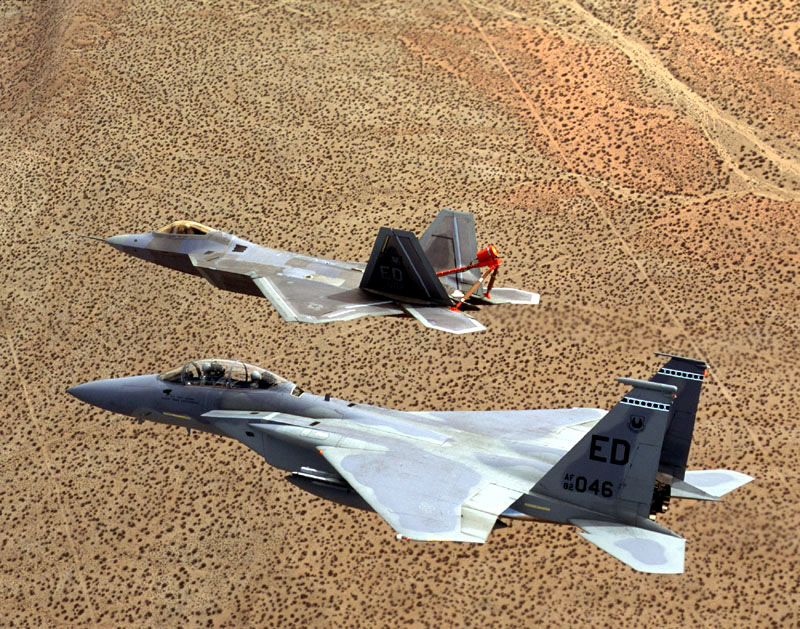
Me and my shadow

EDWARDS AIR FORCE BASE, Calif. -- An F/A-22 Raptor is shadowed by an F-15 Eagle chase plane. The F/A-22 combines stealth, supercruise, maneuverability and many other features enabling a first look, first shot, first kill capability that will provide continued air dominance for generations to come.